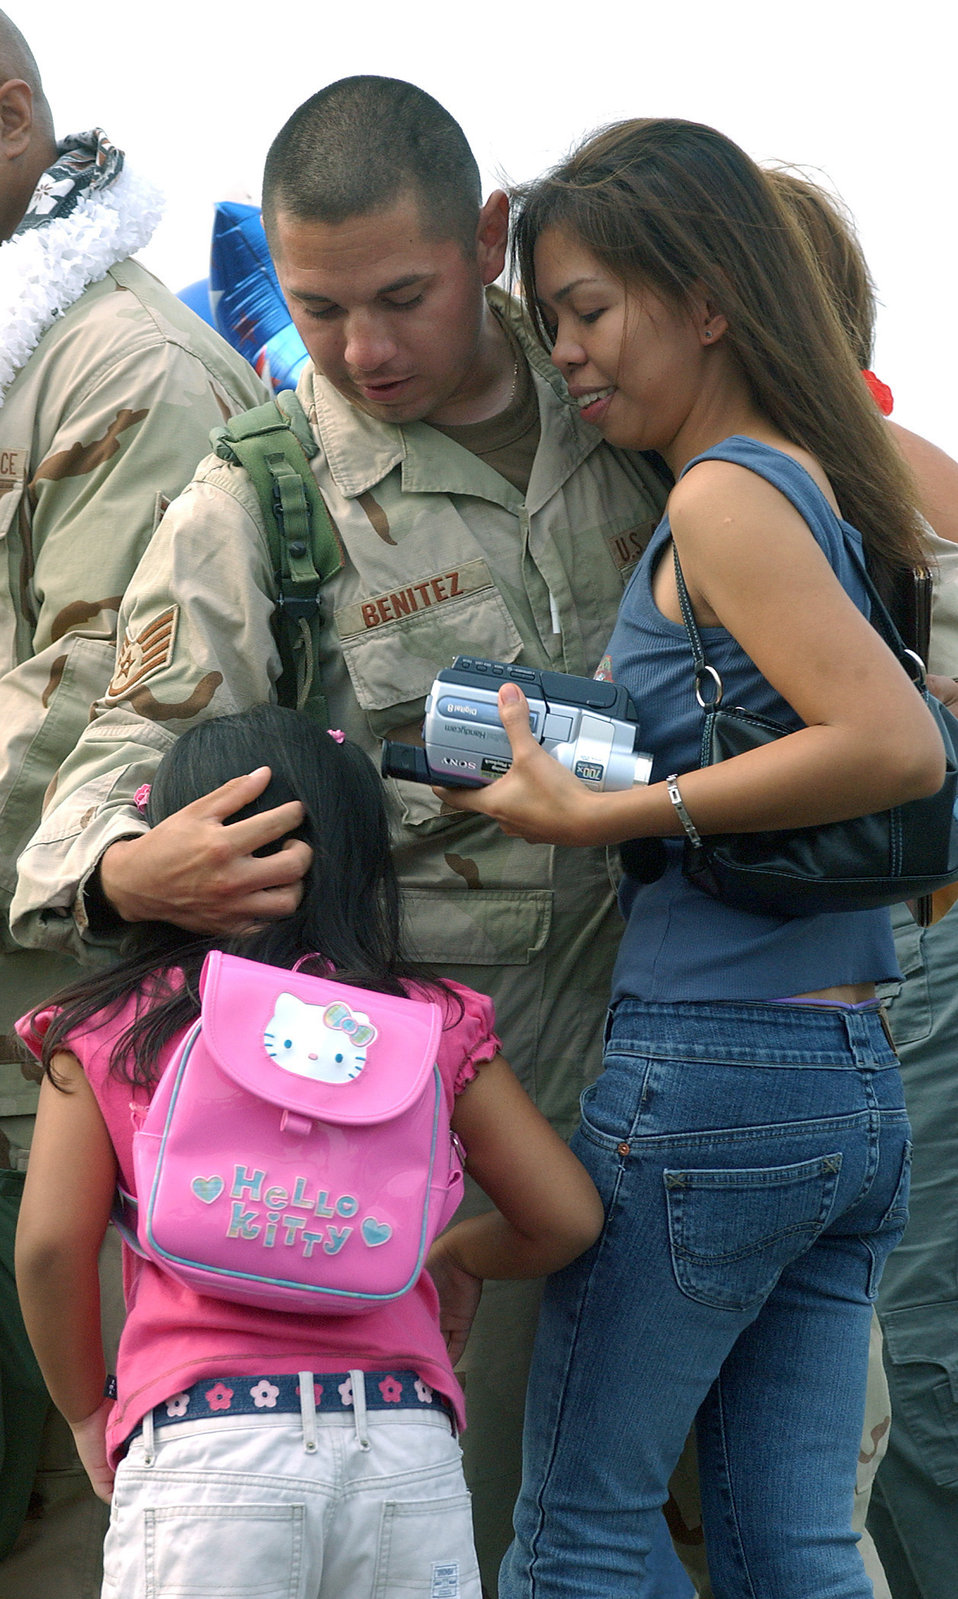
Welcome home!

YOKOTA AIR BASE, Japan -- Staff Sgt. Gerald Benitez is welcomed home from an Operation Enduring Freedom deployment by his wife, Milanie, and daughter, Abby Mei. About 300 people welcomed back nearly 90 deployed Airmen at a ceremony here Sept. 2. Sergeant Benitez is assigned to the 374th Civil Engineer Squadron.